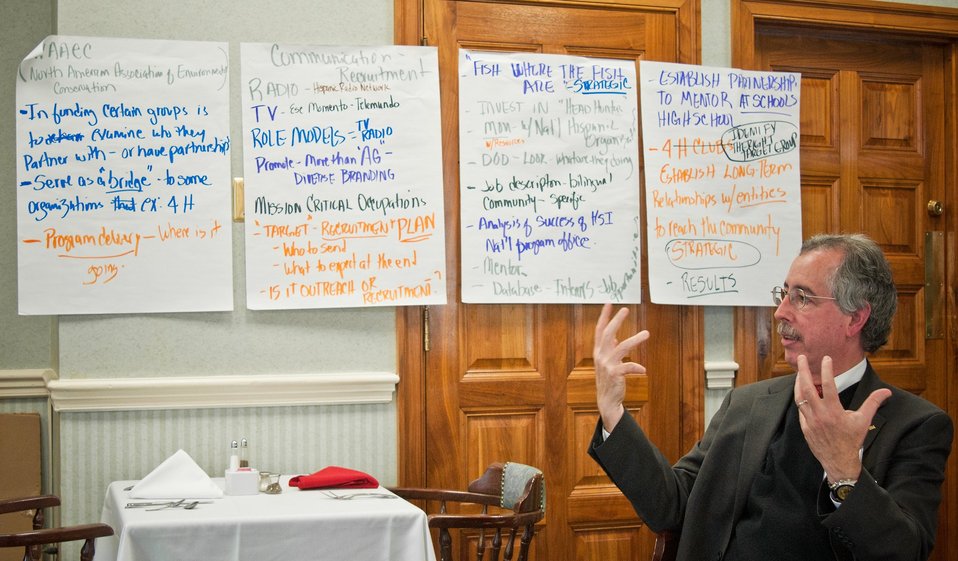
John Villamil-Casanova, Executive Vice President and Chief Information Officer, ASPIRA, Inc. offers an opinion during the facilitated discussion: “Where Can You Assist?” at the United States Department of Agriculture Hispanic Roundtable at the United States Department of Agriculture, Monday, December 5, 2011 in Washington, DC. The roundtable focused on recruitment, retention and employee development for the purpose of developing the USDA Hispanic recruitment Plan. The roundtable hosted several national Hispanic partners and recognized USDA Hispanic organizations and associations.